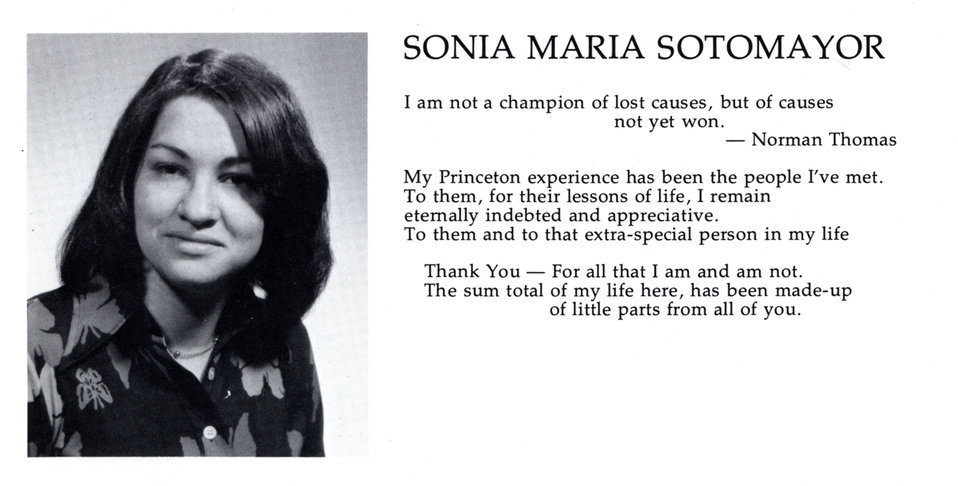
Sotomayor NassauHerald (2)

Judge Sotomayor’s 1976 Princeton yearbook page.